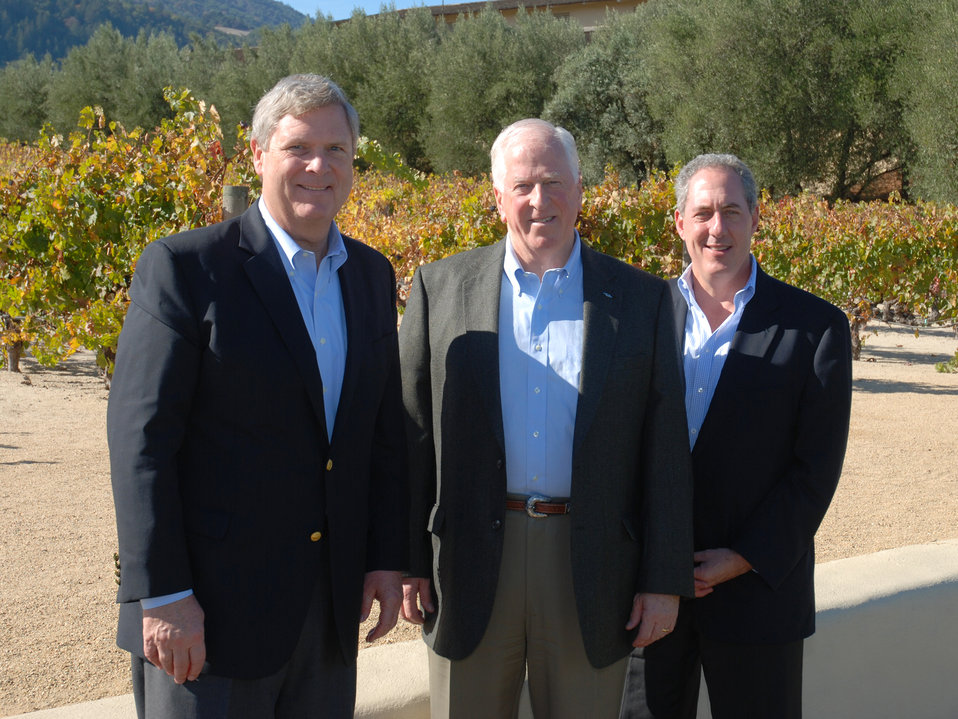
(L to R) Agriculture Secretary Thomas Vilsack with Congressman (CA) Mike Thompson and U.S. Trade Representative Michael Froman at the Mondavi Winery in Napa, CA on Sunday, Nov. 17, 2013.